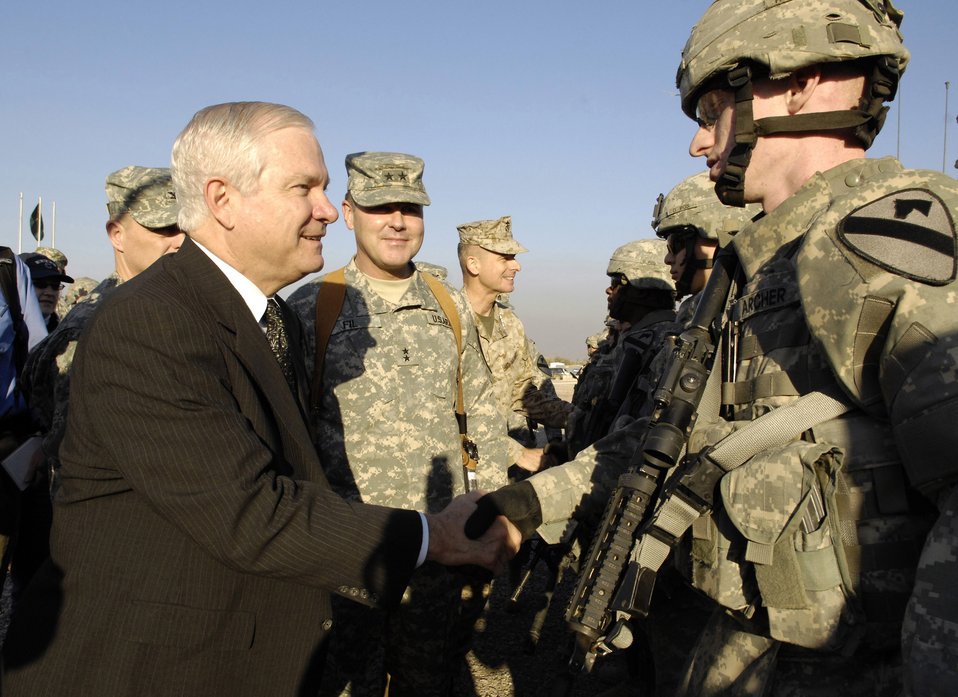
Gates urges Americans to remember servicemembers

Secretary of Defense Robert M. Gates shakes hands with a U.S. Army Soldier from the 1st Cavalry Division in Baghdad, Iraq, Dec. 20. Secretary Gates is in Iraq to meet with deployed troops, military leaders and key Iraqi government officials to help him assess the current situation and to prepare for the future.